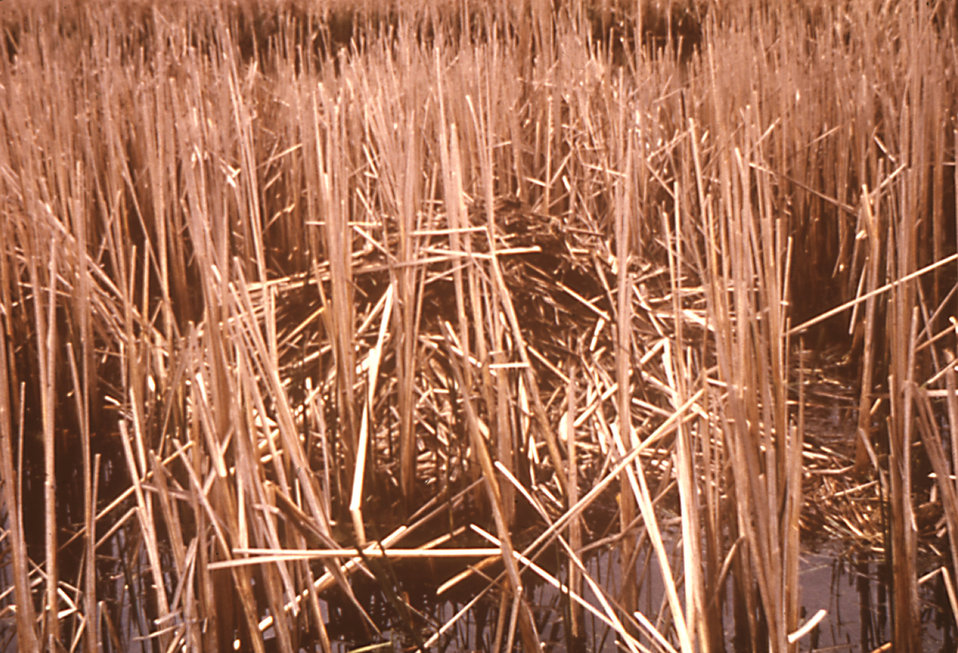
This is a typical "muskrat house" camouflaged by reeds in Little Otter Creek, Vermont.